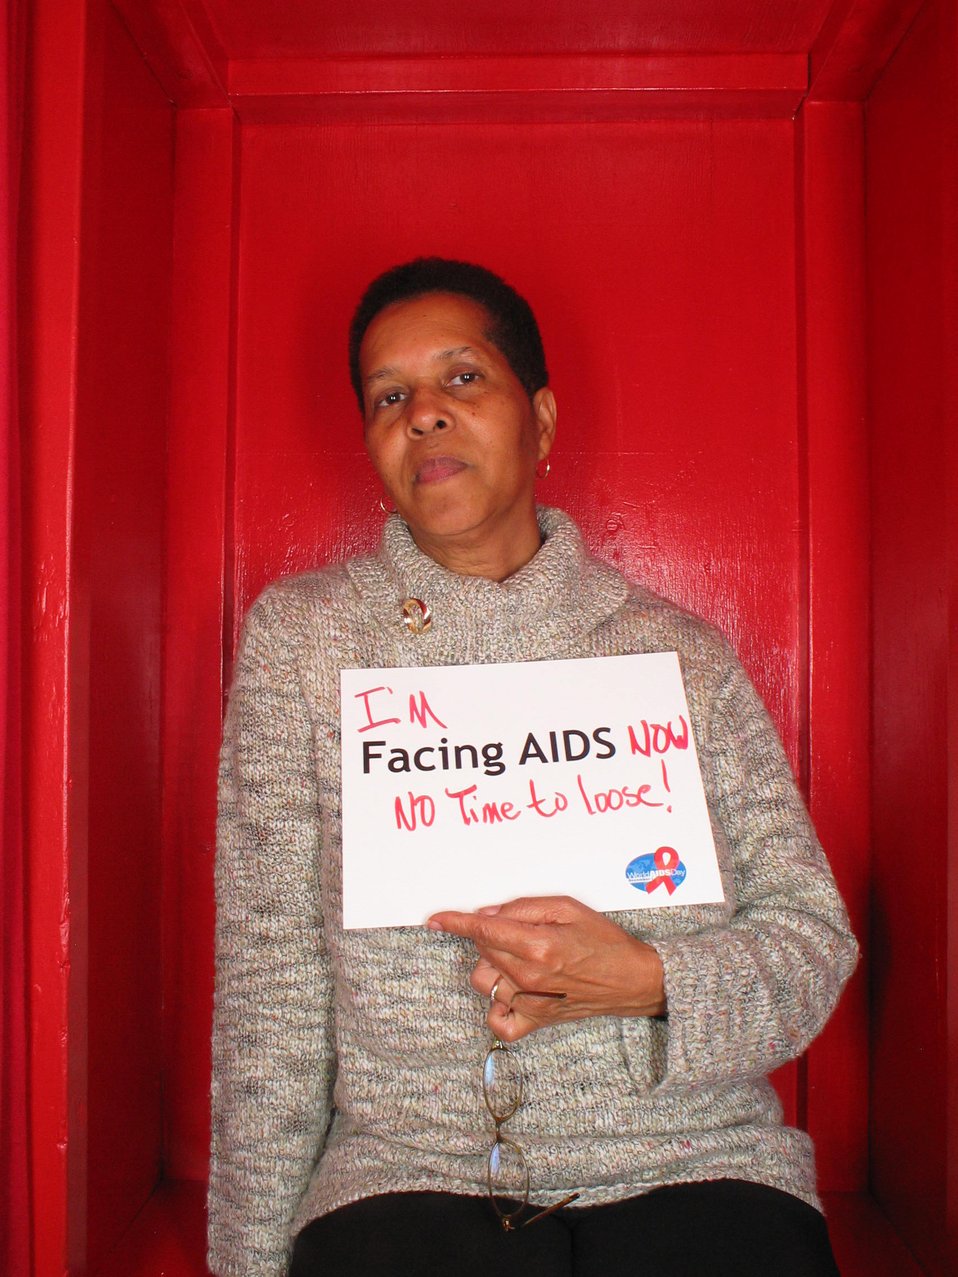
I'm Facing AIDS now. No Time to loose!